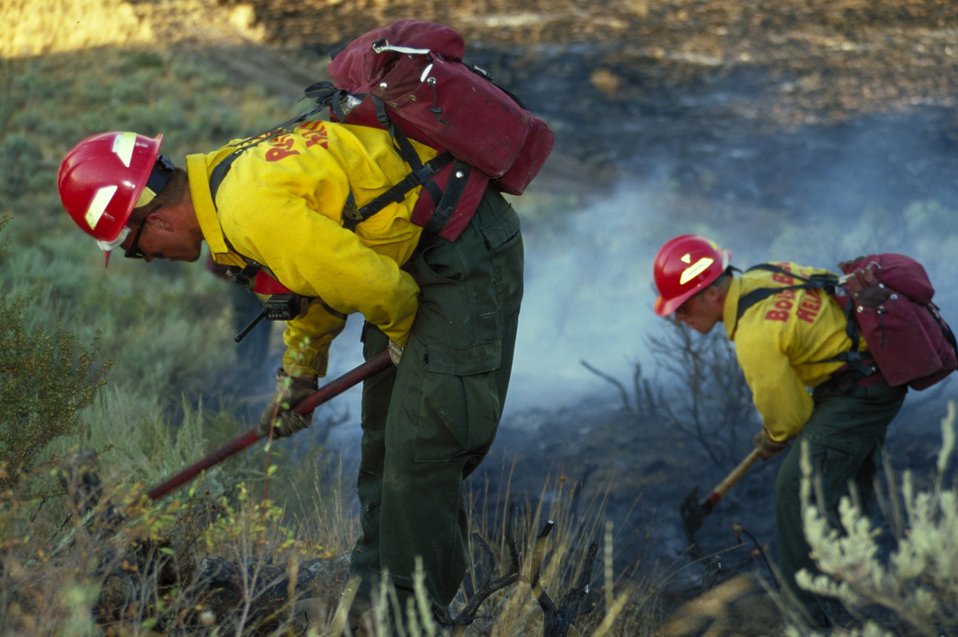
Prescribed burn Fire Season 2000 Lower Snake River District LSRD